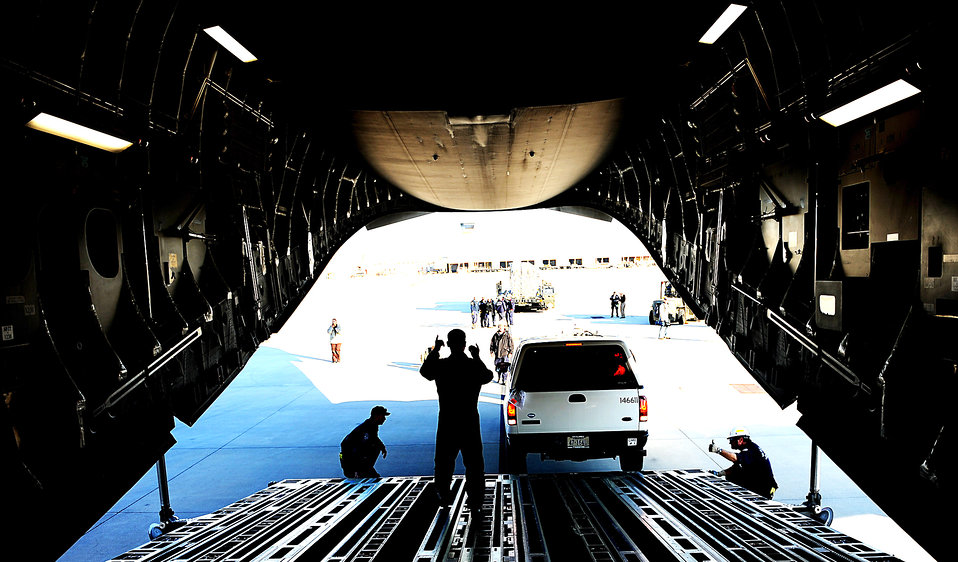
Haiti Earthquake Relief

Loadmaster Staff Sgt. Benjamin Cato from the 21st Airlift Squadron at Travis Air Force Base, Calif., backs in a utility vehicle to be taken to Haiti as part of the earthquake relief Jan. 15, 2010, at Norfolk, Va.